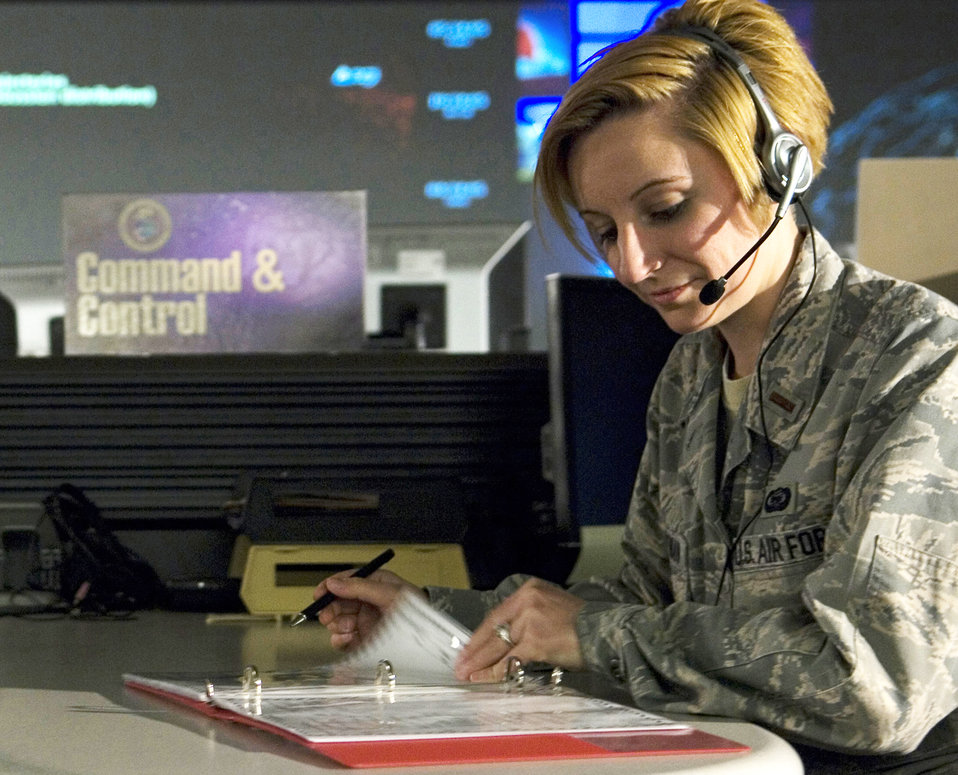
Joint Space Operations Center

Second Lt. Melissa Huffman, a collections analyst at the Joint Space Operations Center at Vandenberg Air Force Base, Calif., reviews data received on the Delta II site there. The purpose of the JSpOC is to provide a focal point for the operational employment of worldwide joint space forces, and enable the commander of Joint Functional Component Command Space to integrate space power into global military operations.